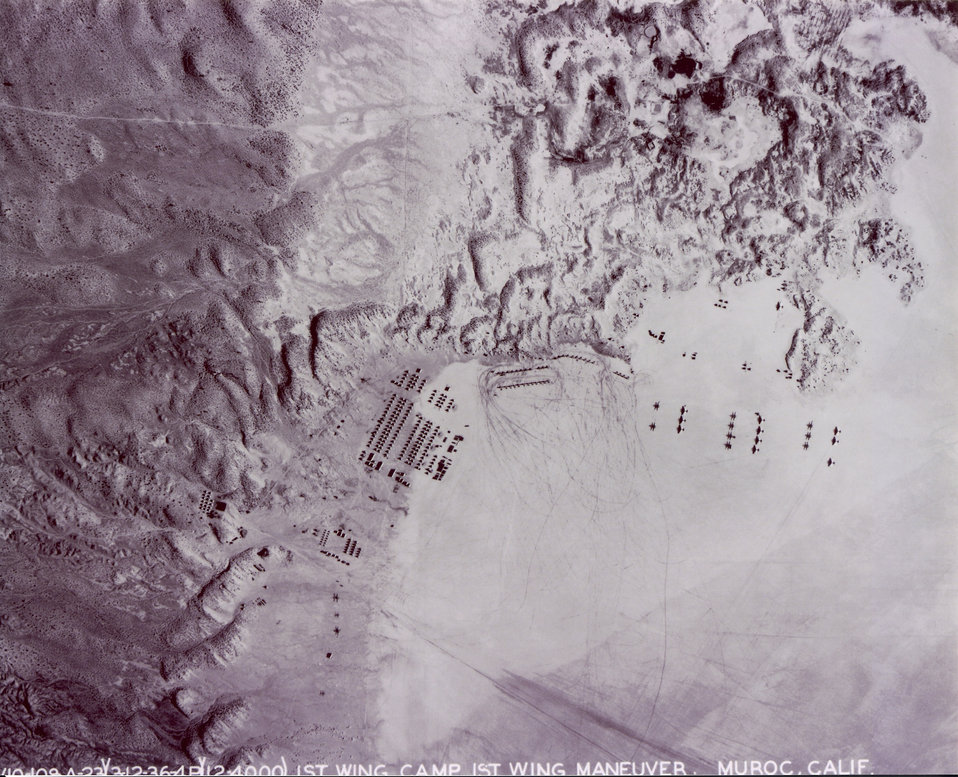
1st Wing at Rogers Dry Lake

Overhead view of the Army Air Corps 1st Wing bivouacked on Rogers Dry Lake, Calif. in 1936.